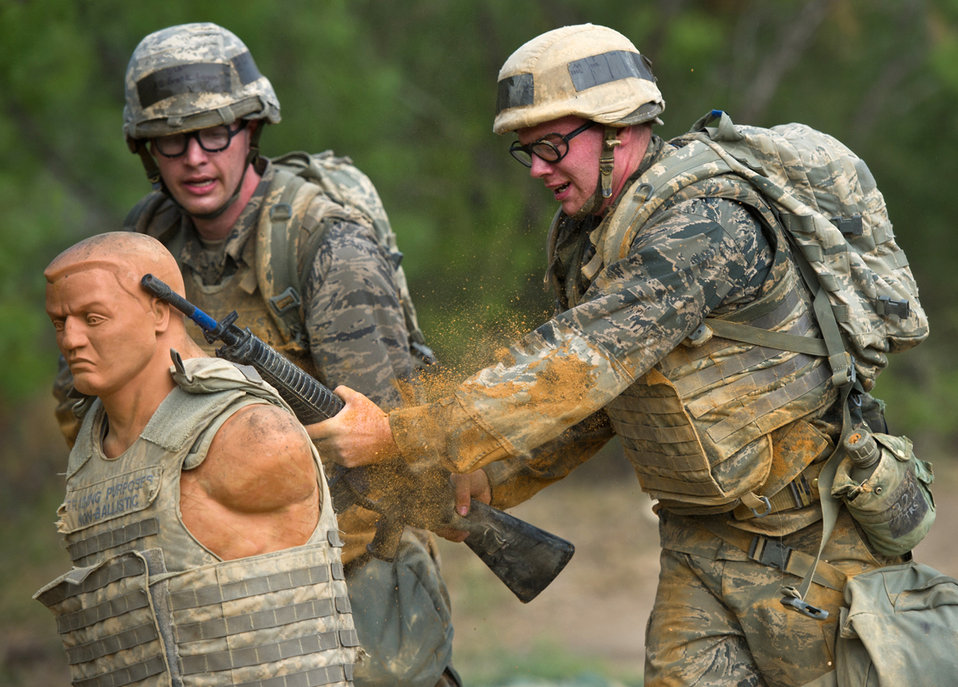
Tactical applications

Basic trainees run through a tactical course during the Creating Leaders, Airmen and Warriors course July 27, 2011, at Medina Annex in San Antonio, Texas. In addition to fitness and combat training, basic military training trainees are taught foundational Air Force information, including core values, customs and courtesies, basic policies and procedures, and military studies.